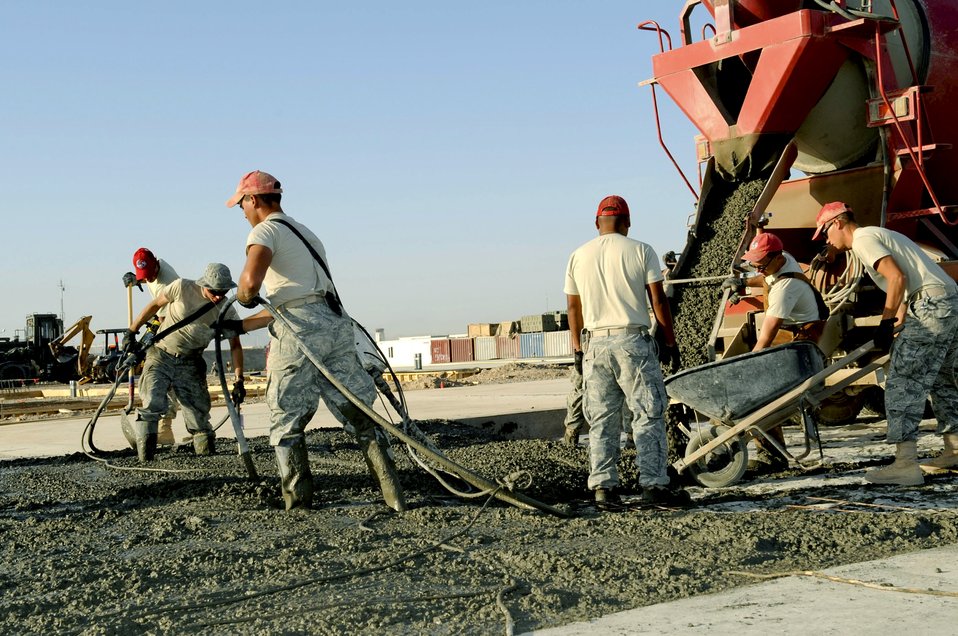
RED HORSE Airmen construct shelter pads

Members of the 809th Expeditionary RED HORSE Squadron pour concrete May 15, 2010, at Kandahar Airfield, Afghanistan for the large-area maintenance shelter pads for aviation maintenance.